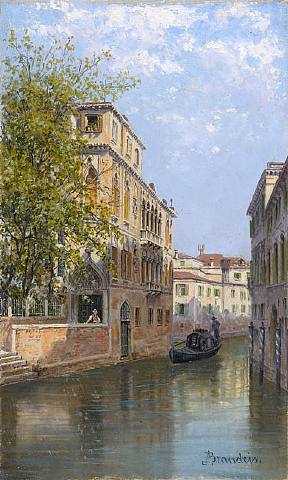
Artwork images 1004 281329 antonietta-brandeis